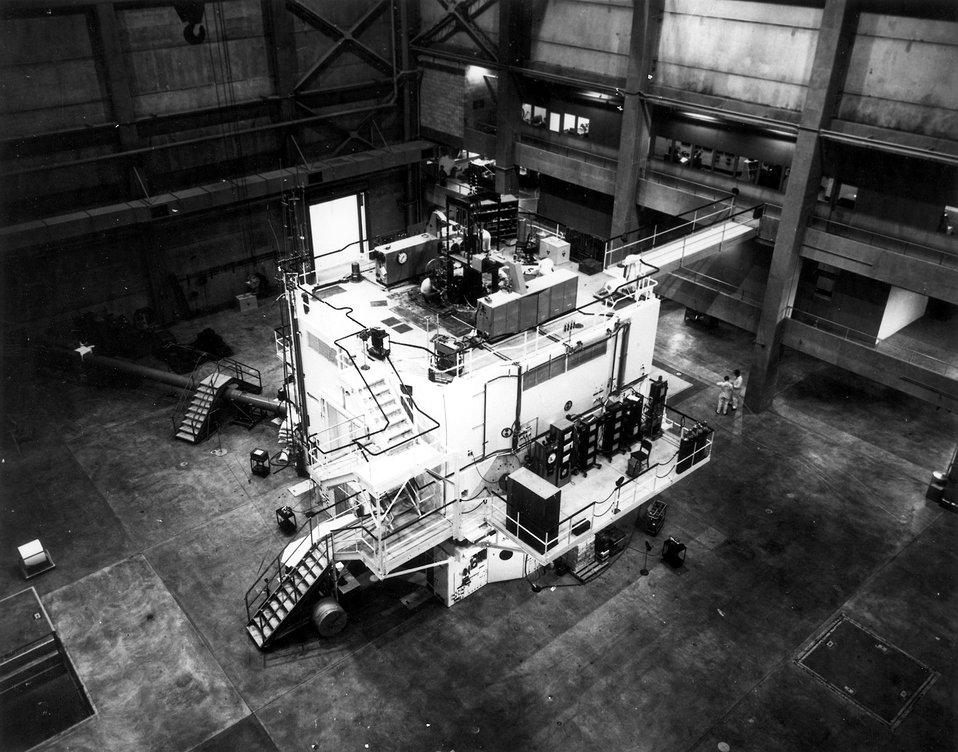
National Reactor Testing Station, Idaho... Materials Testing Reactor at the National Reactor Testing Station. Circa 1954.